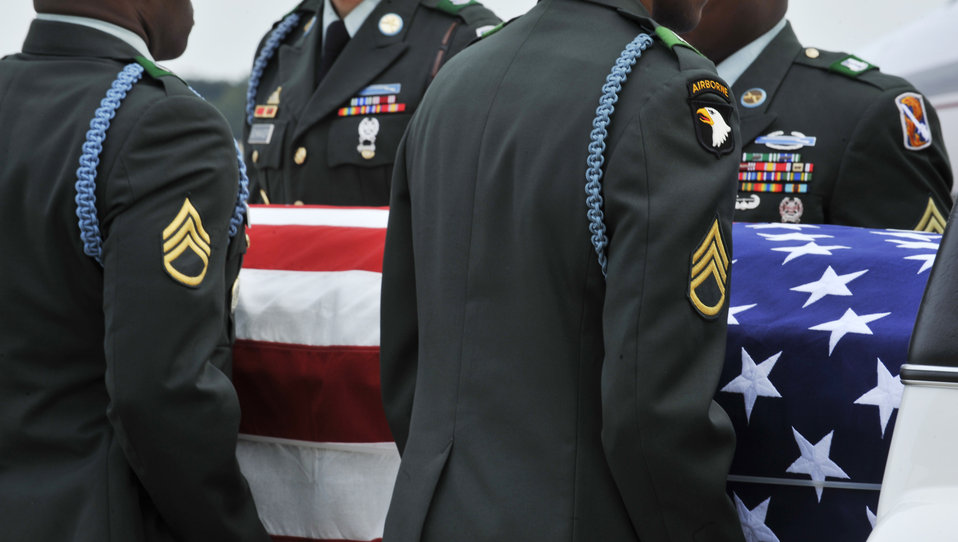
Moody community pay respect to fallen warrior

Members of the 198th Infantry Honor Guard from Fort Benning, Ga., place Army Staff Sgt. Briand Williams, a fallen Soldier, into a hearse Dec. 3, 2009, at Moody Air Force Base, Ga. Sergeant Williams died Nov. 22, 2009, in Numaniyah, Iraq, from wounds he sustained when insurgents attacked his unit using small-arms fire. He was assigned to the 1st Battalion, 10th Field Artillery Regiment, 3rd Brigade Heavy Combat Team, 3rd Infantry Division at Fort Benning.